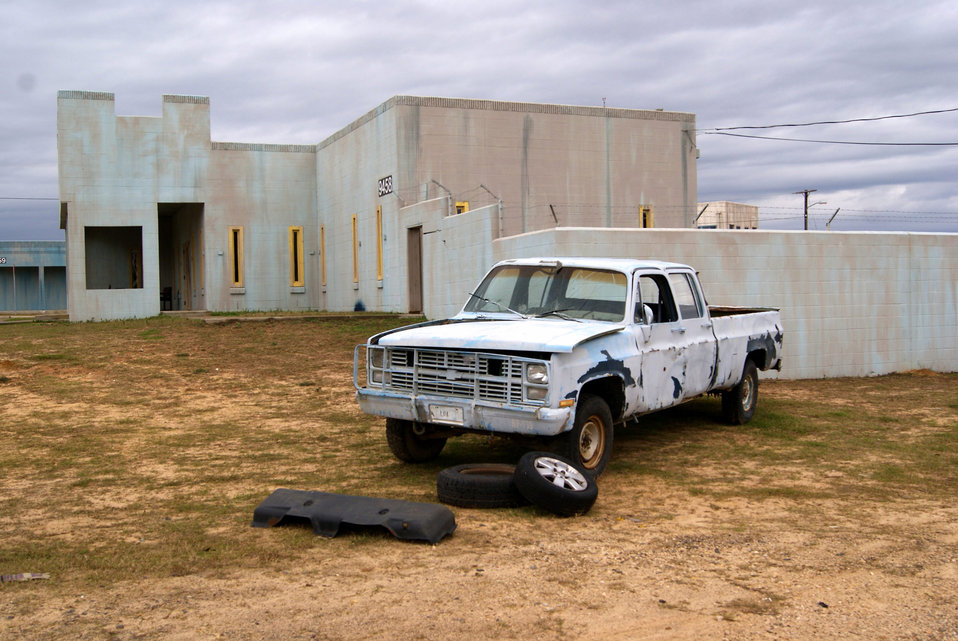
Old truck in fake pakistan

An old truck serving as a prop in the "city" of dara lam at fort polk.